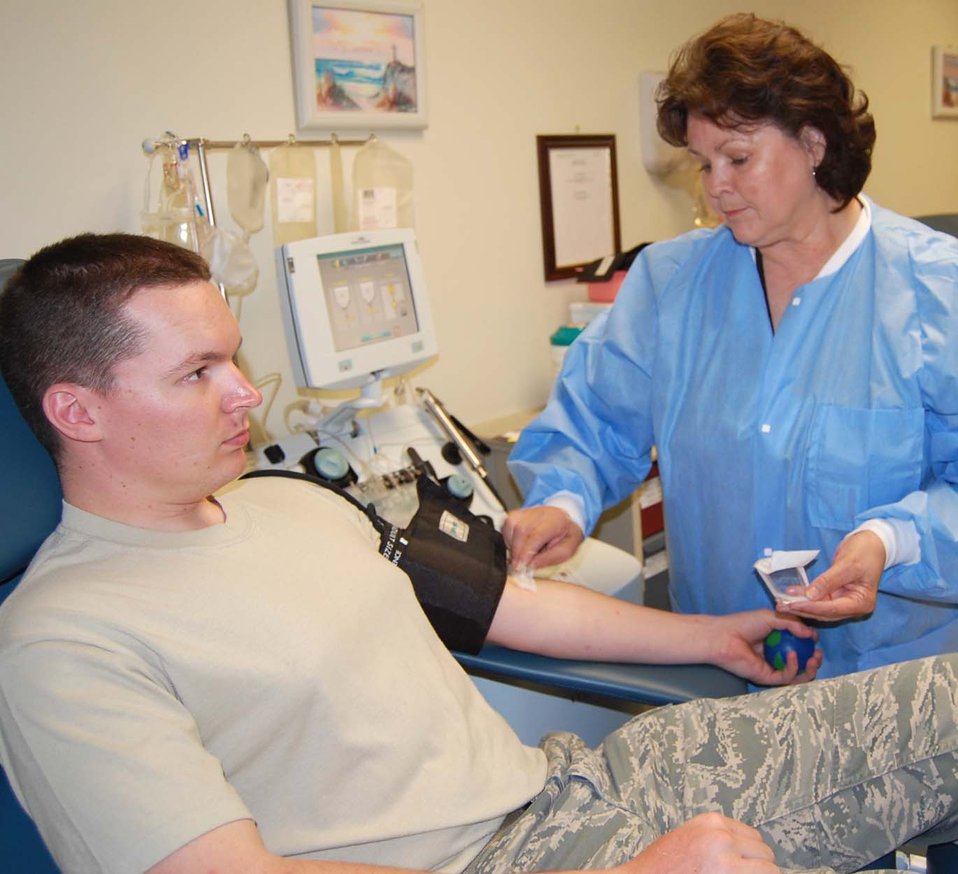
Apheresis broadens impact of blood donations

Rose Weatherly prepares Airman 1st Class Marthinus Taljaard, 81st Diagnostics and Therapeutics Squadron at Keesler Air Force Base, Miss., for platelet donation. This was the second time he had participated in the apheresis process.